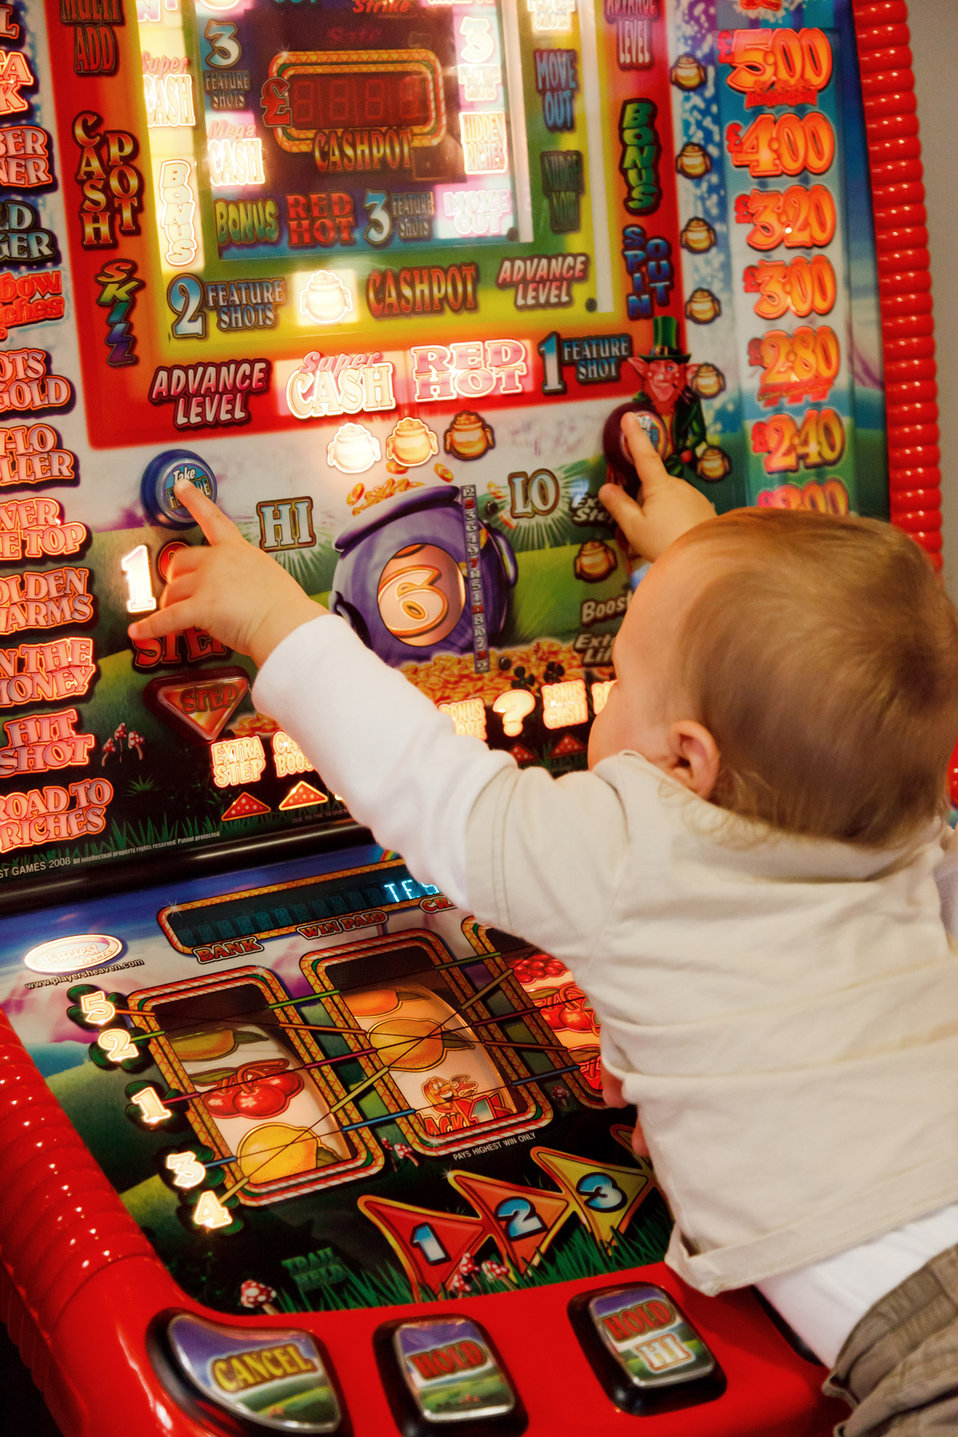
Excited gambler

Little enthusiastic player.